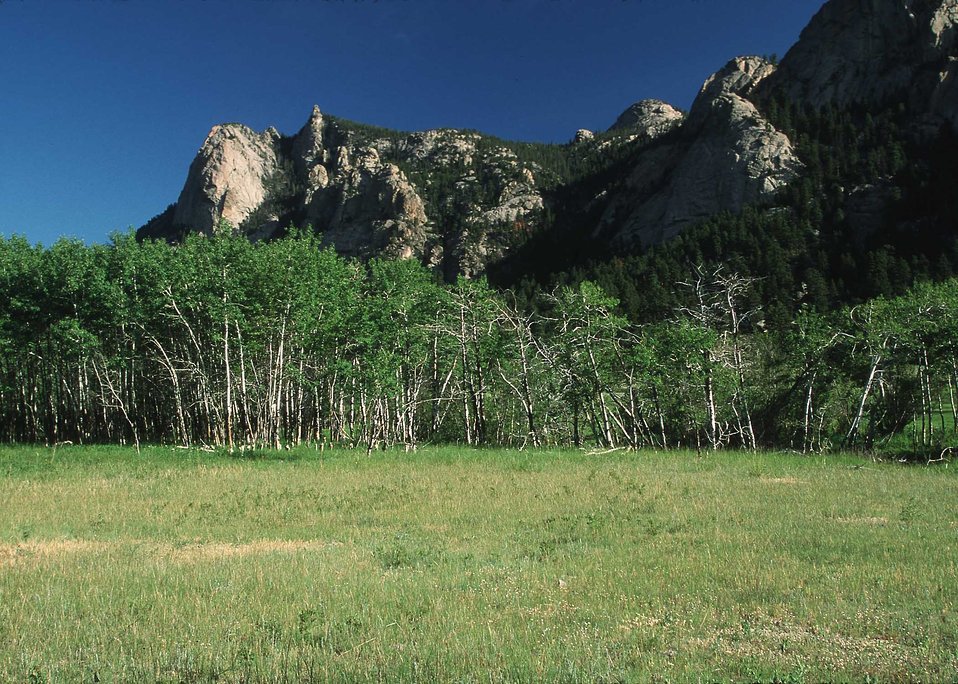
Elk Hedged Aspen, McGregor Ranch, RMNP.